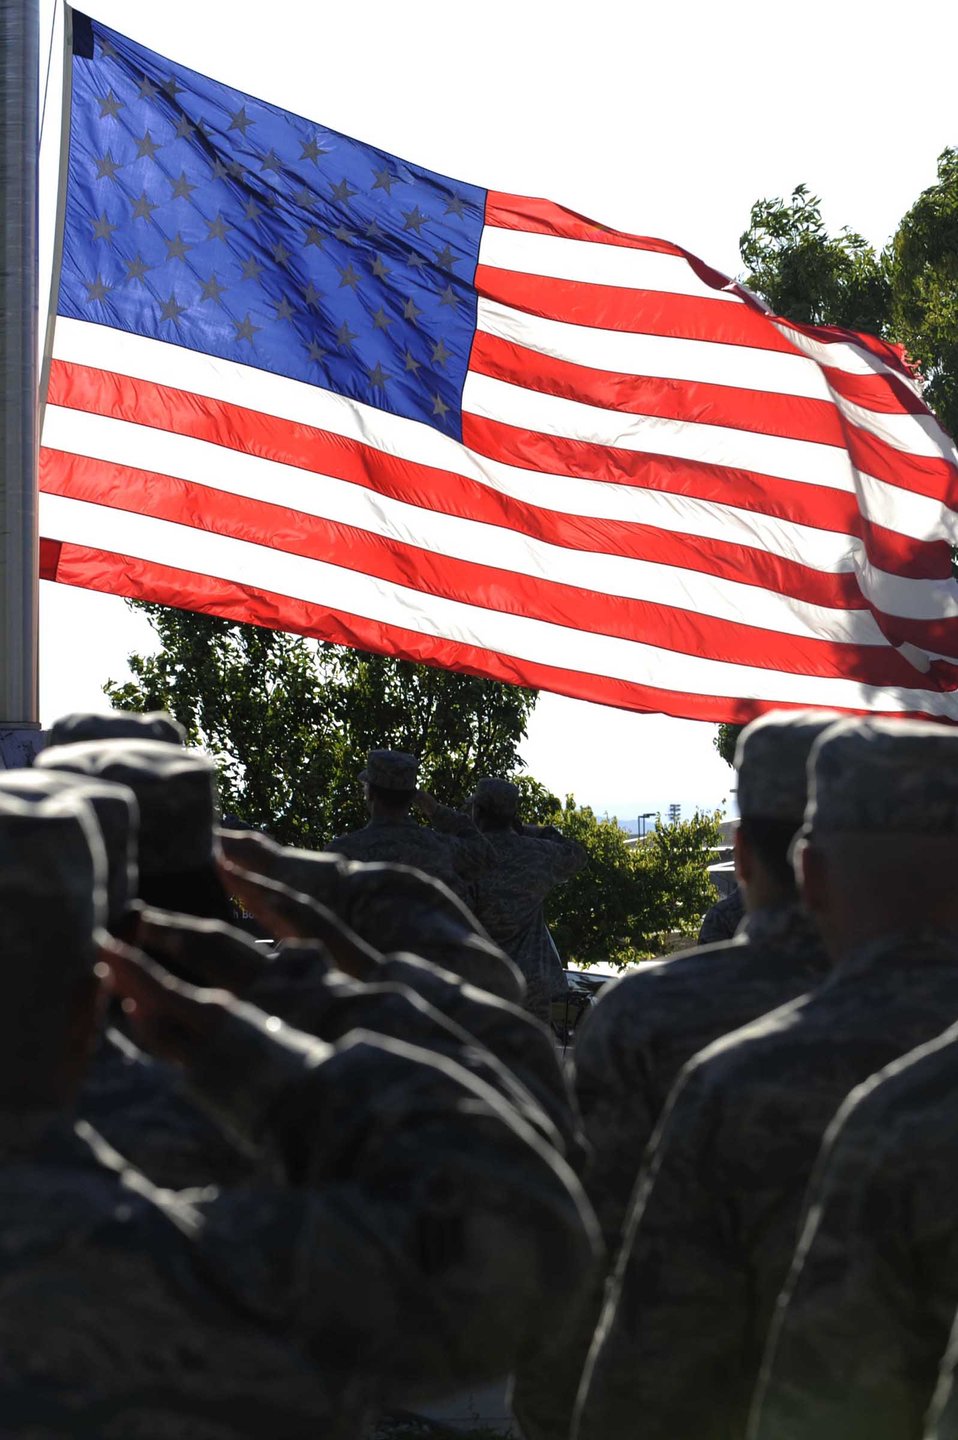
Air Combat Command honors POW/MIA Remembrance Day

Ellsworth Air Force Base Airmen salute the American flag as it is lowered during the Prisoners of War/Missing in Action Remembrance Day retreat ceremony at Ellsworth Air Force Base, S.D., Sept. 18, 2009. The entire day was dedicated to remembering servicemembers taken prisoners of war or missing in action.